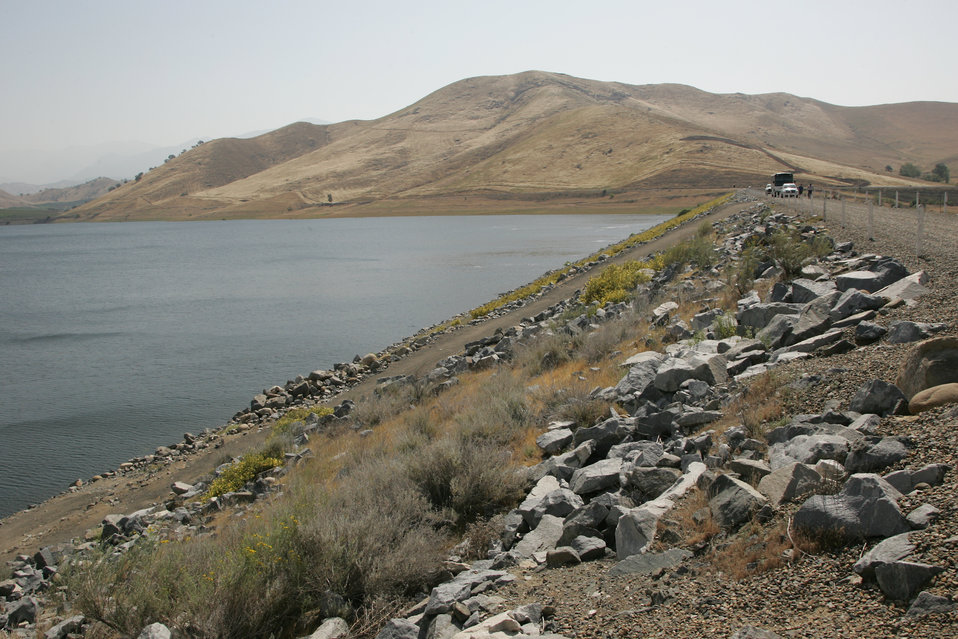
Success Dam

Looking east across Success Dam, located near Porterville, Calif., May 1, 2007. The U.S. Army Corps of Engineers Sacramento District completed construction of Success Dam in 1961 and the reservoir provides flood risk management, water storage and recreational benefits to the local area.